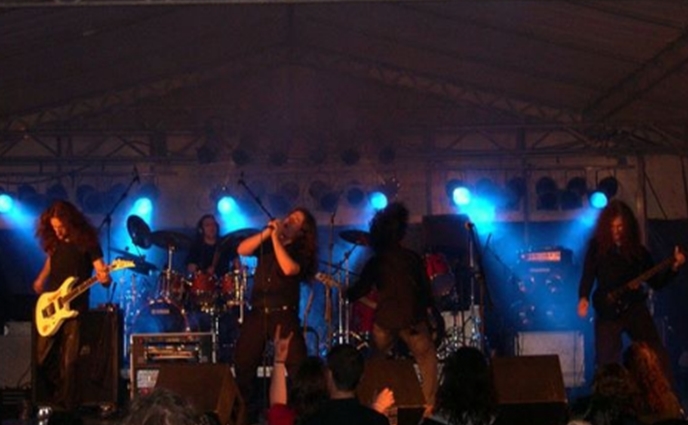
DarkSun live at El Lado Oscuro Tour.